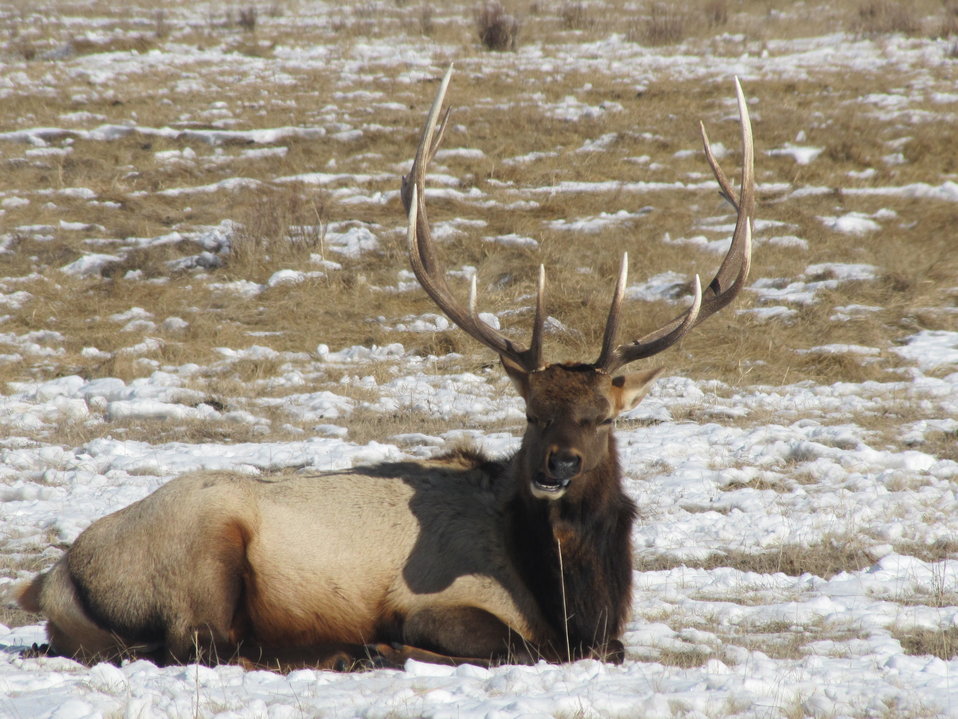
Chewing His Cud

What do you do when it's mid-afternoon in the single digits? Sit in the sun and chew your cud!
'I think I have to sneeze'.